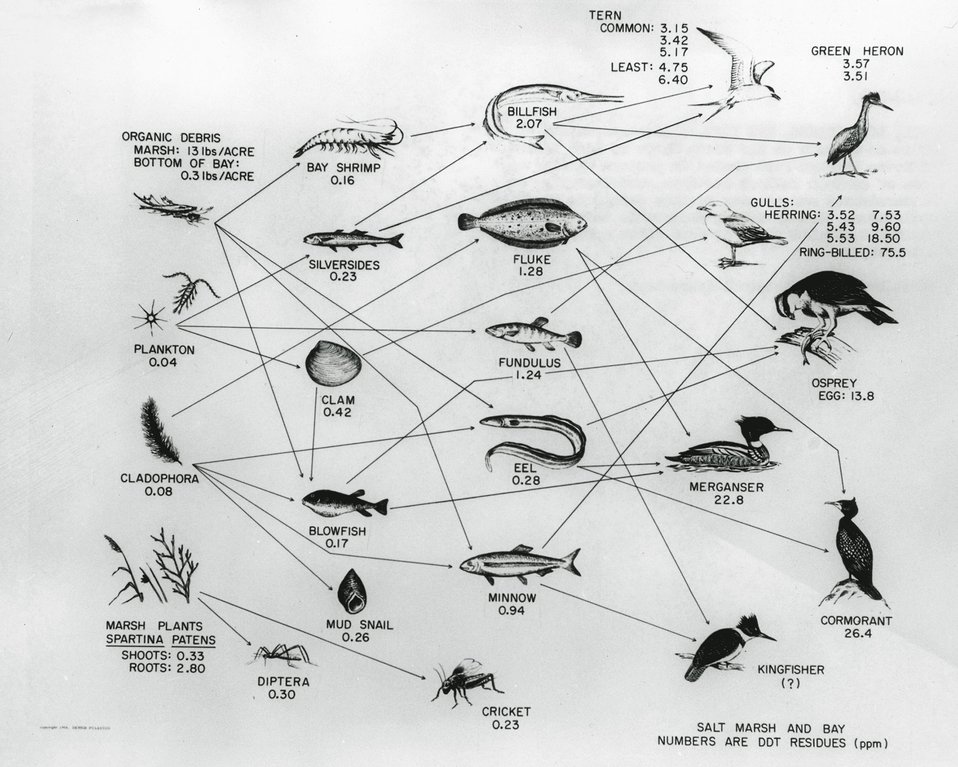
Concentrations of DDT in an estuary on the South Shore of Long Island, DDT moves through food chains in patterns similar to those of certain fallout isotopes, concentrating in the carnivores and causing serious damage to those populations. c. 1968